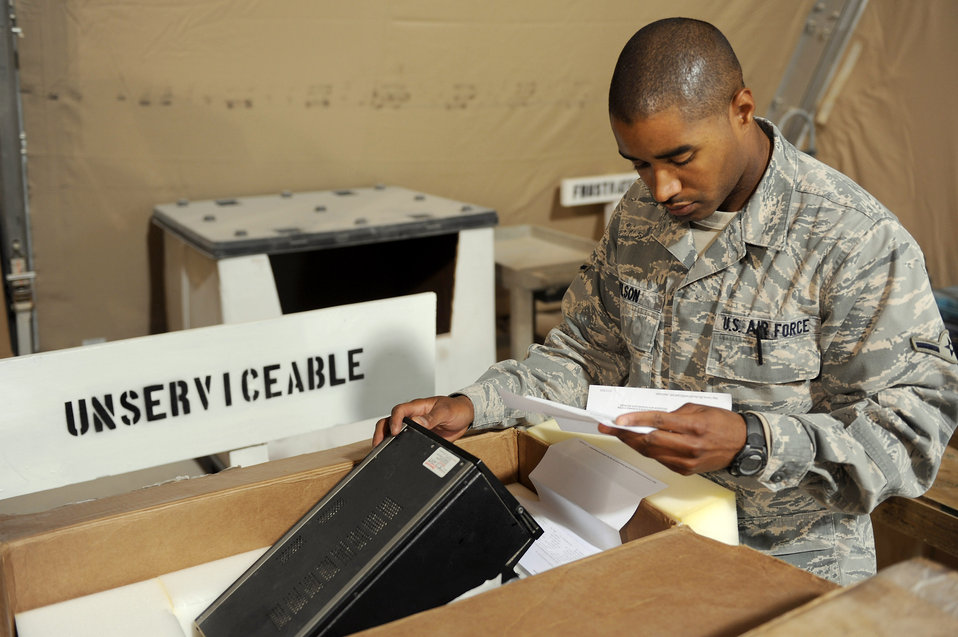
KAF APS

Airman Charlie Wilson checks the part number of an unserviceable aircraft part Dec. 16, 2010, at Kandahar Airfield, Afghanistan. The 451st Expeditionary Logistics Readiness Squadron Aircraft Parts Store supports 11 aircraft maintenance units with an inventory of more than 250,000 parts valued at $19 million. Airman Wilson is a material management specialist assigned to the 451st ELRS.